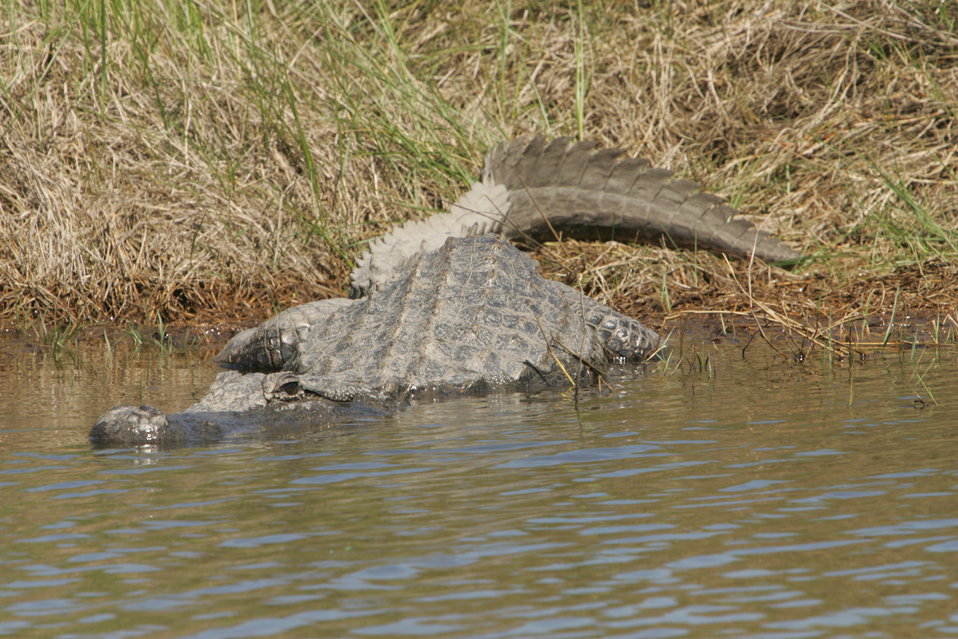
American alligator

An American alligator slithers into the water.